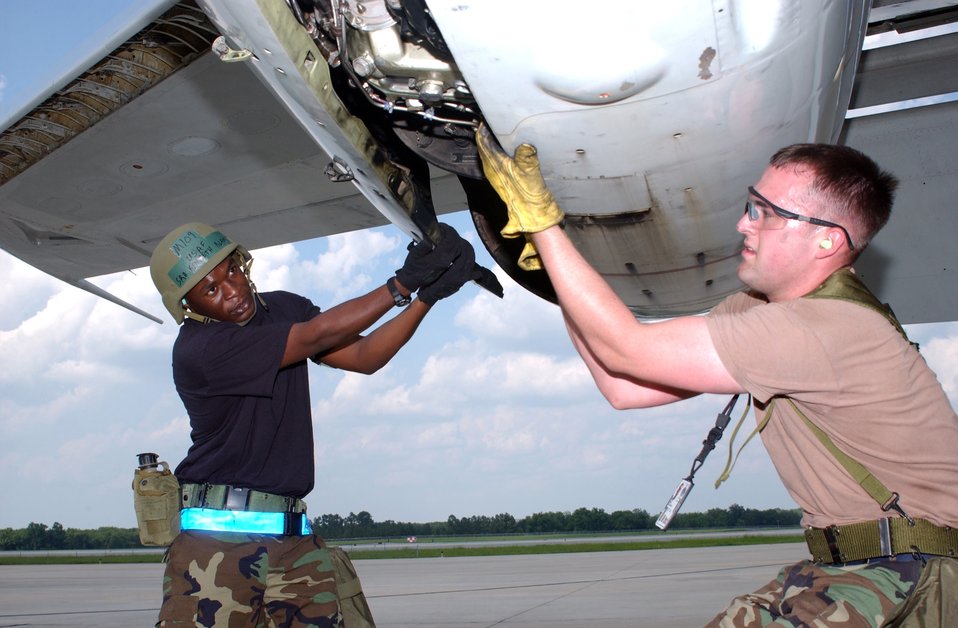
First Future Total Force wing proves successful

ROBINS AIR FORCE BASE, Ga. -- Senior Airman Jason Meyer (left) and Airman 1st Class Kenneth Bland check the engine of an E-8C Joint Surveillance and Target Attack Radar System during an operational readiness exercise here. The 116th Air Control Wing is the first Future Total Force wing, combining active-duty and Air National Guard Airmen in a single unit. The unit is responsible for the worldwide employment of the Joint STARS aircraft.